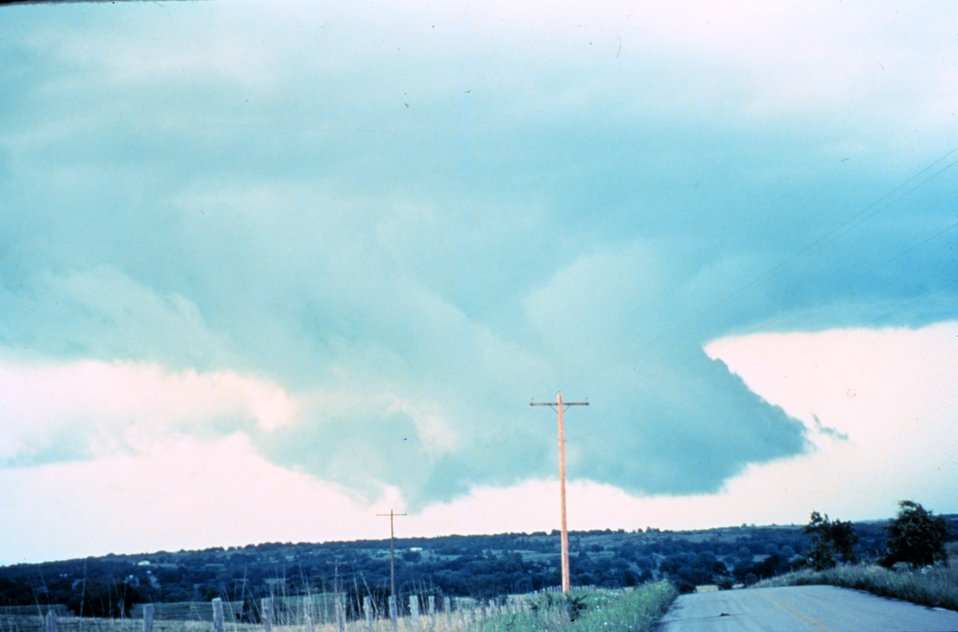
Wall cloud - Towering cumulus with rain-free base. A wall cloud, a lowering of the cloud base underneath main storm updraft, forms in this thunderstorm. Tornadoes can form out ot the wall clouds.